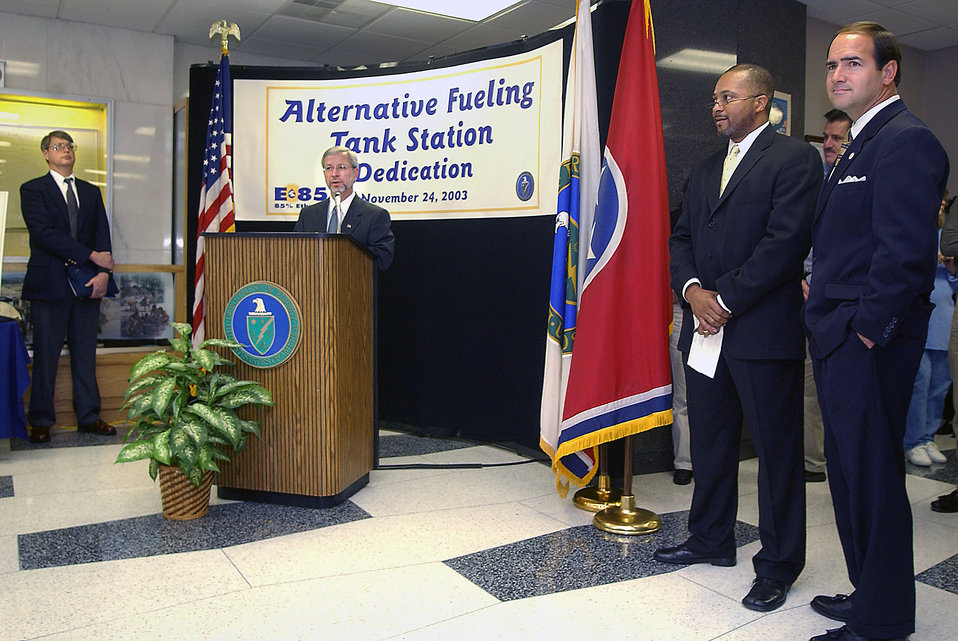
E-85 Fuel Opening at Federal Building

03-349-8 DOE photo by Lynn Freeny
Speaking Gerald Boyd Manager ORO,Mark Deathridge Pres. ETMC and Congressman Zach Wamp Oak Ridge Tennessee Nov. 24, 2003